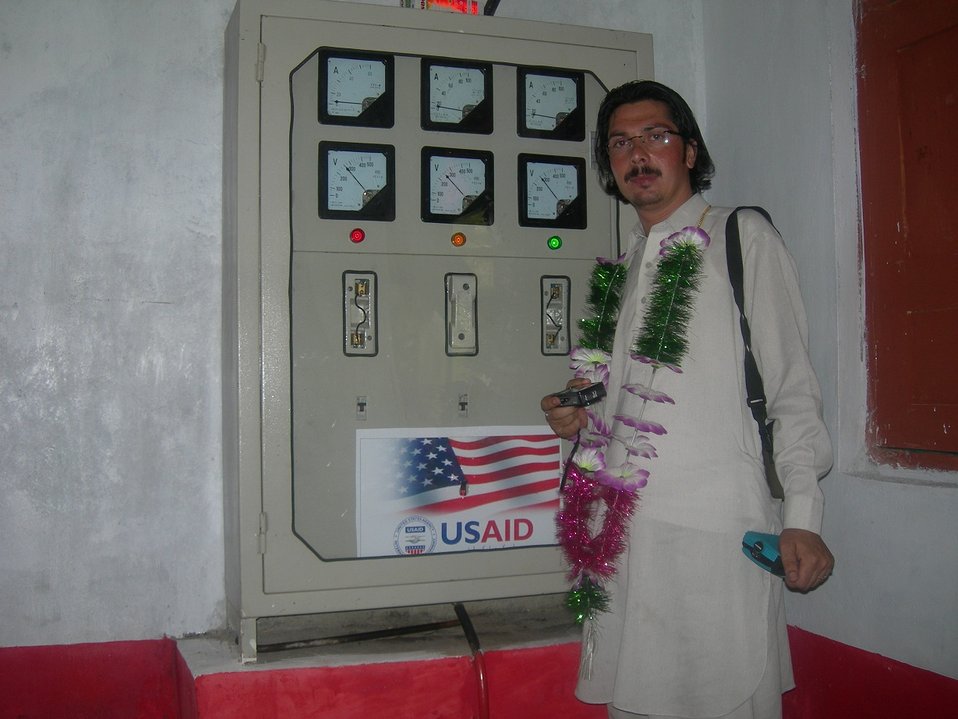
Power Project Launch

A new wave of energy has swept a remote village of Matta Tehsil. Children are excited, elders relieved. Electricity had lit their dark houses after over six decades of independence and connected them to the modern world.
“We can now watch cartoons on the TV just like all the other children,” said an excited child during the inauguration of a micro-hydropower station on Saturday.
The community-based power station, which will supply electricity to about 110 households in Swatai village, has been installed with the assistance of Small Grants Ambassador Fund Program of the USAID in collaboration with the Swat Participatory Council (SPC).